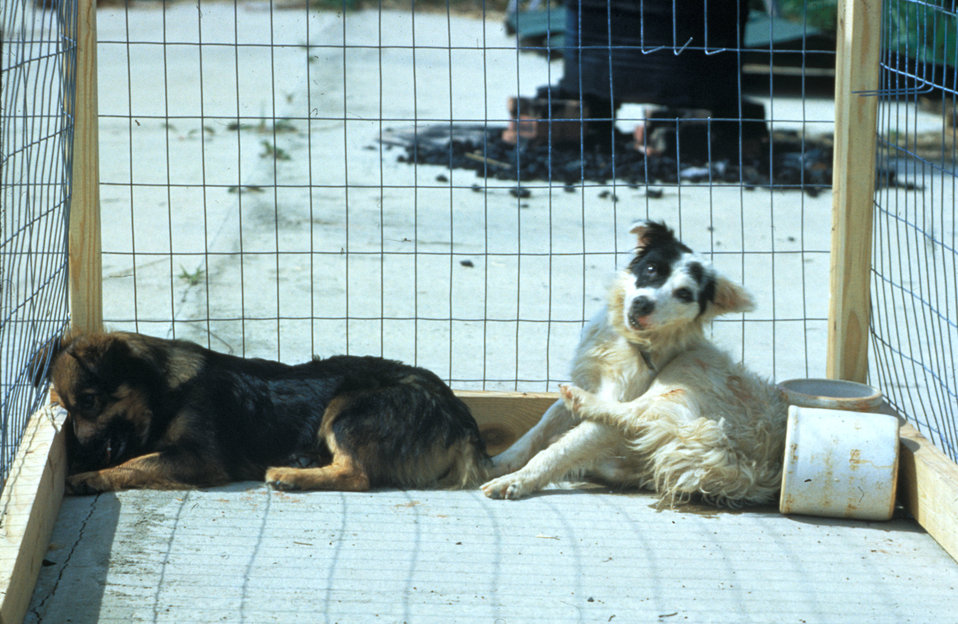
Here are two dogs afflicted with dumb rabies, manifested as depression, and an attempt at self-imposed isolation. See PHIL 13341, for another view of these rabid canines.